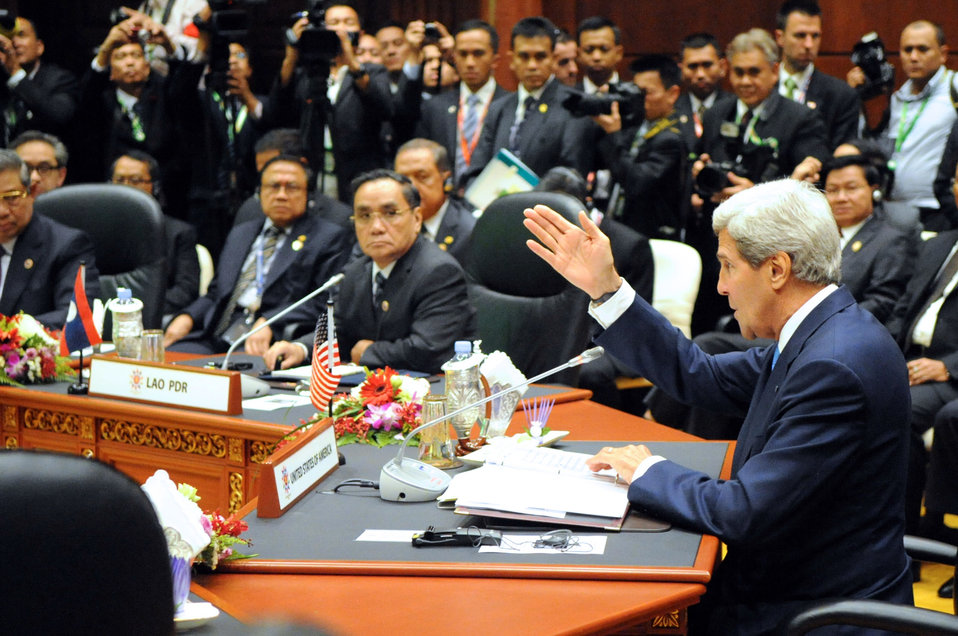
Secretary Kerry Addresses the U.S.-ASEAN Summit

U.S. Secretary of State John Kerry addresses the 10 member-nations of the Association of Southeast Asian Nations at the outset of a U.S.-ASEAN Summit meeting in Bandar Seri Begawan, Brunei, on October 9, 2013.